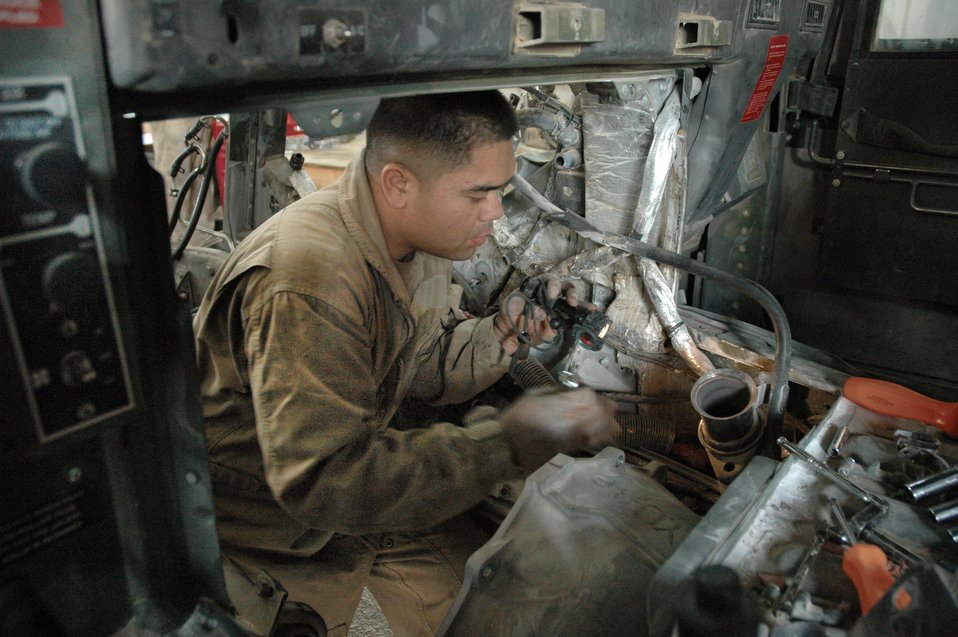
Mechanics turn wrenches to save lives

TIKRIT, Iraq (AFPN) -- Staff Sgt. Mel Perero installs a wiring loom in the engine compartment of a Humvee during an engine change. Mechanics assigned to the 732nd Expeditionary Logistics Readiness Squadron at base Speicher maintain armored gun trucks used by the Air Force convoy security detachment. Sergeant Perero deployed from Misawa Air Base, Japan.